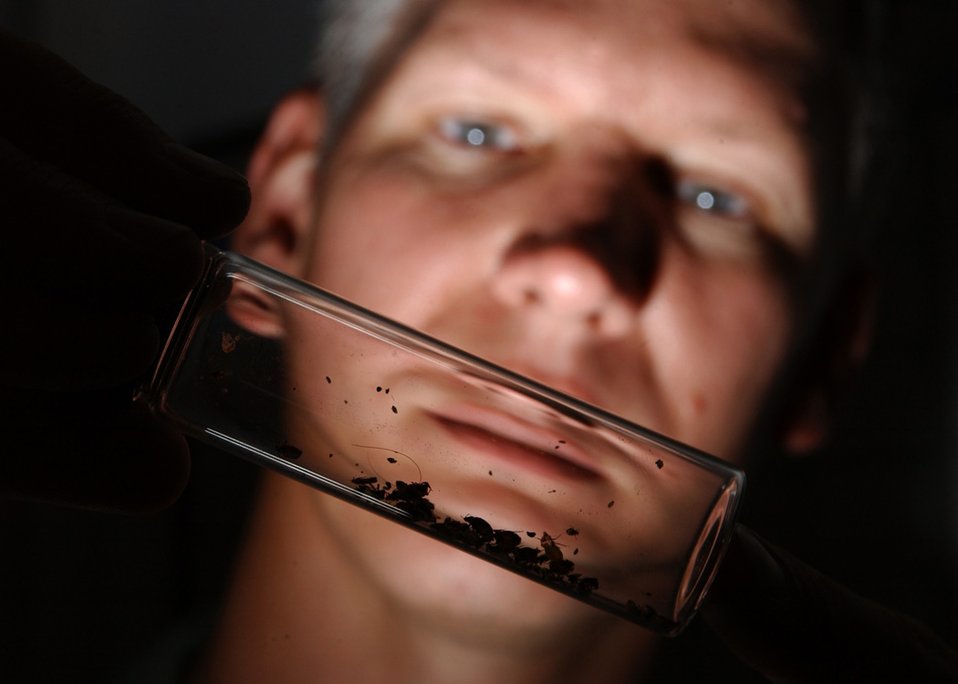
Don't let 'em bite

EIELSON AIR FORCE BASE, Alaska -- Tech. Sgt. Richard Hartke inspects a jar of bedbugs here June 28. The 354th Civil Engineer Squadron’s pest management section Airmen use biological, mechanical and cultural methods to deter and catch pests around base.